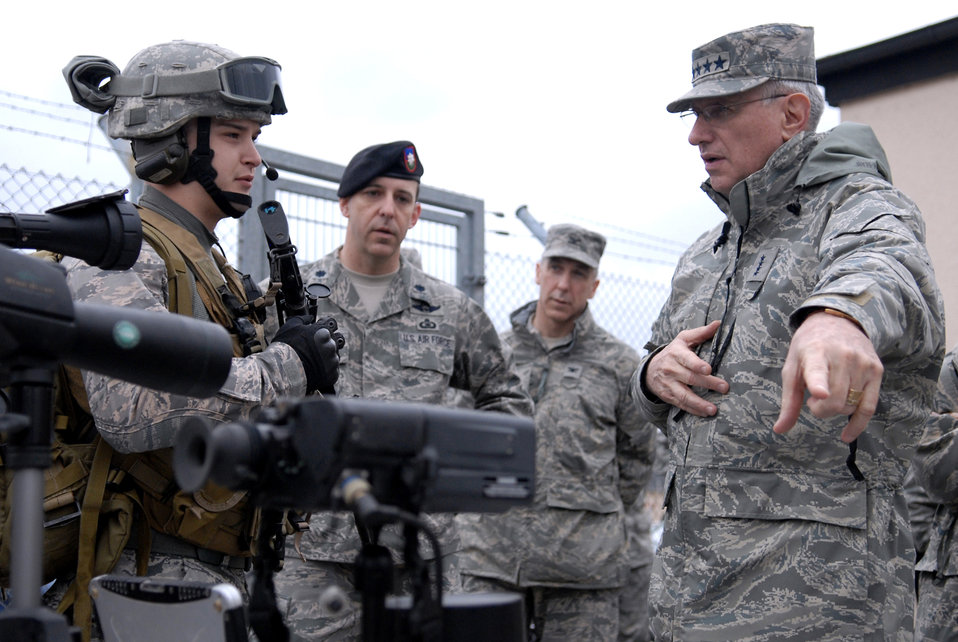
Visit to 435th Air Ground Operations Wing

Gen. Roger A. Brady, U.S. Air Forces in Europe commander, talks with Airman 1st Class Michael Kelley, a tactical air control party specialist, about the equipment he carries in the field. General Brady was visiting the 4th Air Support Operations Group at Wiesbaden Army Air Field, Germany, March 16, 2010.